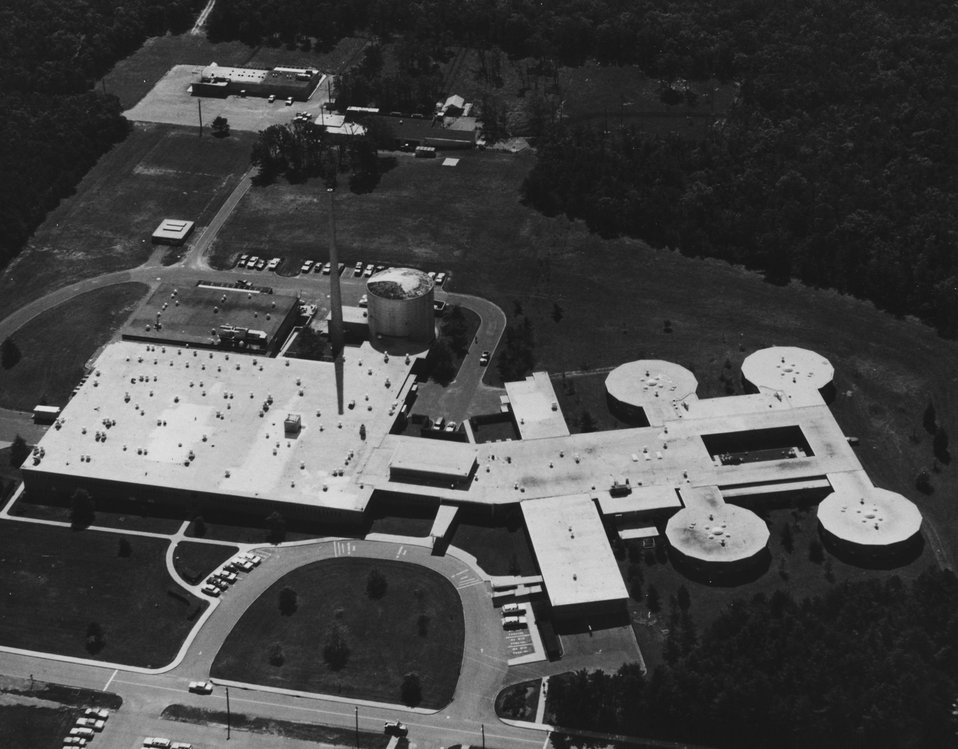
Aerial view of the U.S. Atomic Energy Commission's Brookhaven National Laboratory Medical Research Center. c. 1973